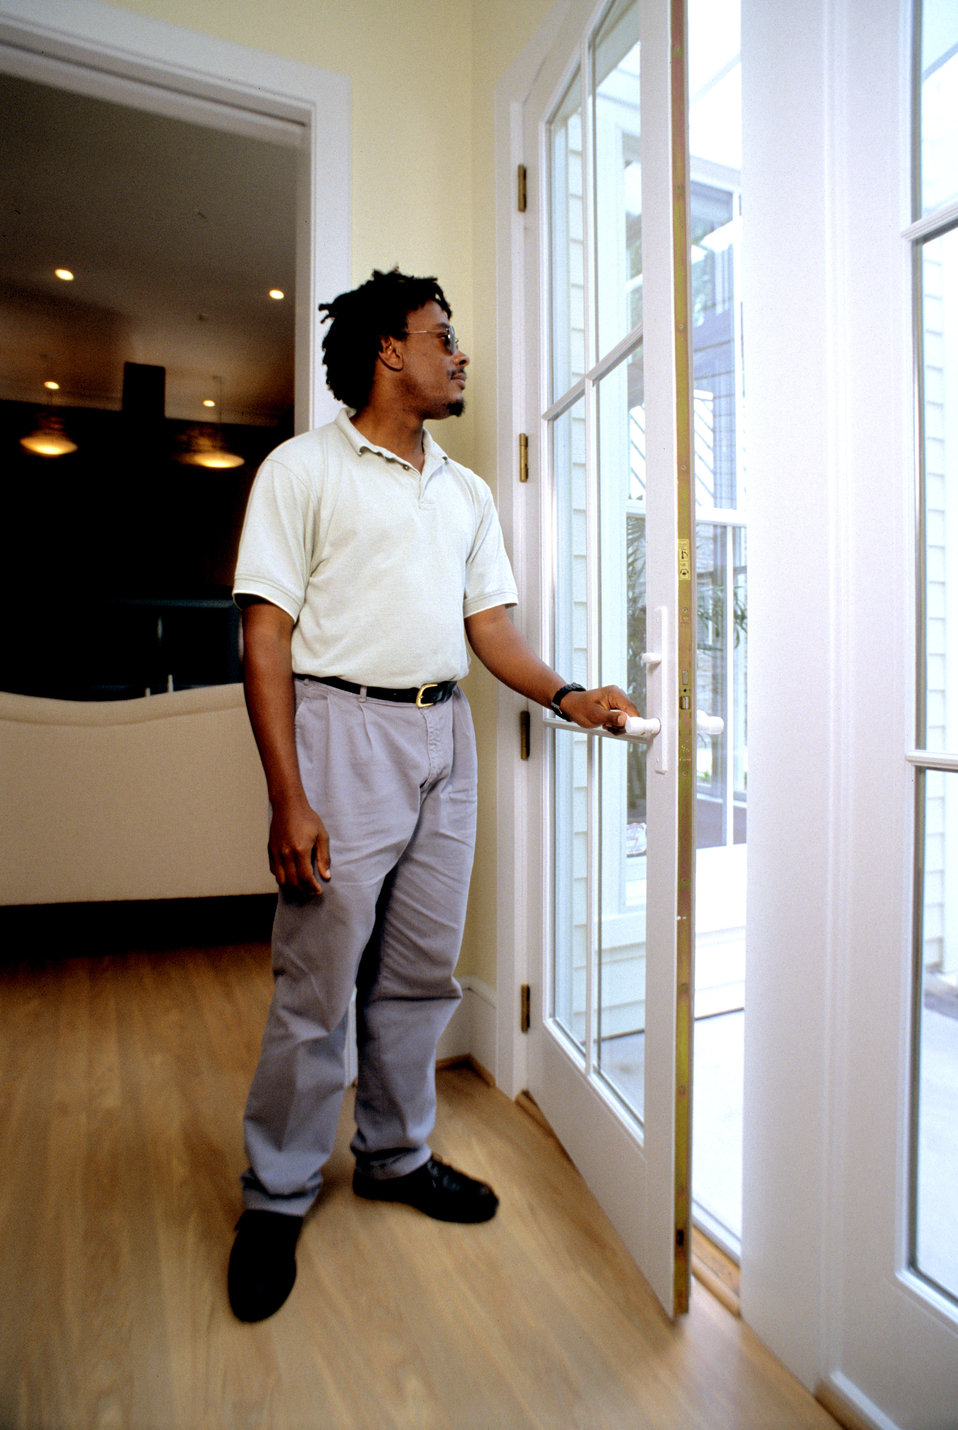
This is one of three images, (PHIL# 9162 - 9164), which depicted three different scenarios taking place at the same residential rear door involving three different people in the process of exiting the residence to the home's back deck. This particular image showed an adult man who did not appear to be mobility-challenged, standing at this door, which was slightly opened, and was looking outside just before he was about to exit the residence. The door itself was of wood frame construction with glass panels, side hinged, and operated by using a levered handle. Implementing a universal design, there was ample space around the door, and an exterior porch level with the first floor. The door's windows allowed residents the opportunity to see who was outside, a 36' width that provided for easy passage by all, and a low threshold that reduced the entry barriers to those with mobility problems, as well as the likelihood of tripping for all.